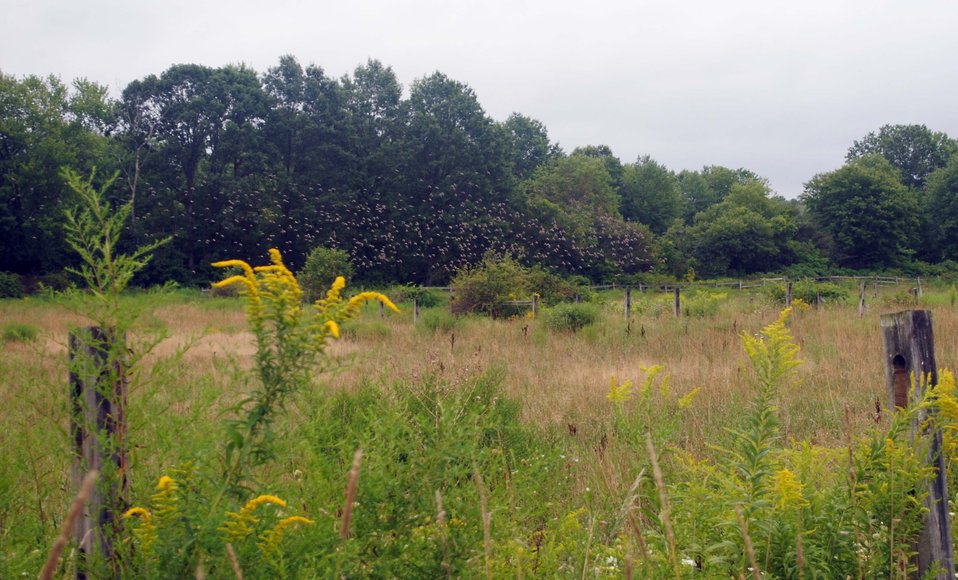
Flock of sparrows in flight over a field at the Fort River Division of the Silvio O. Conte National Wildlife Refuge, Hadley, MA.